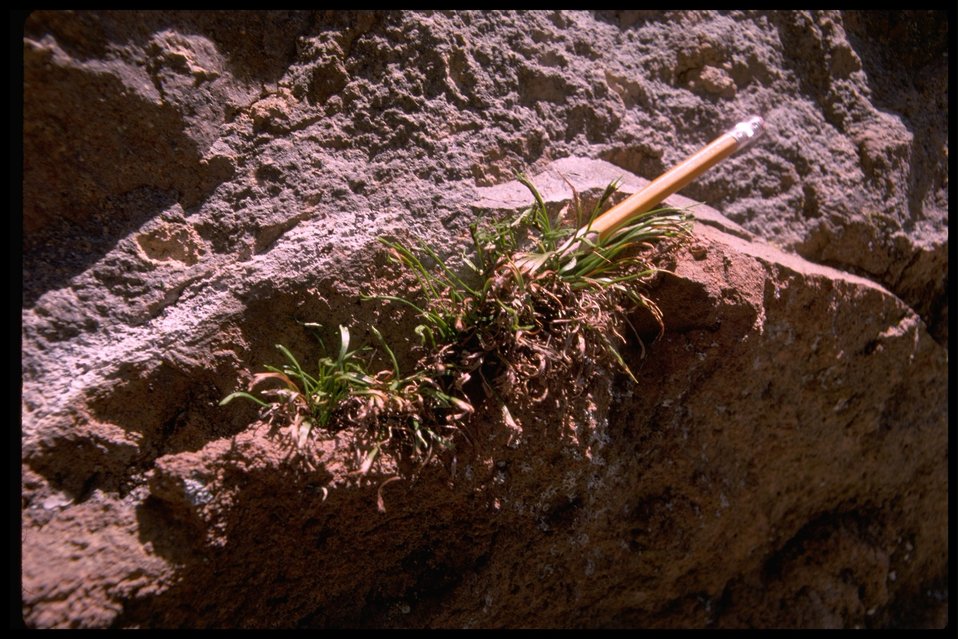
Asplenium septentrionale, commonly known as the Grass Fern.